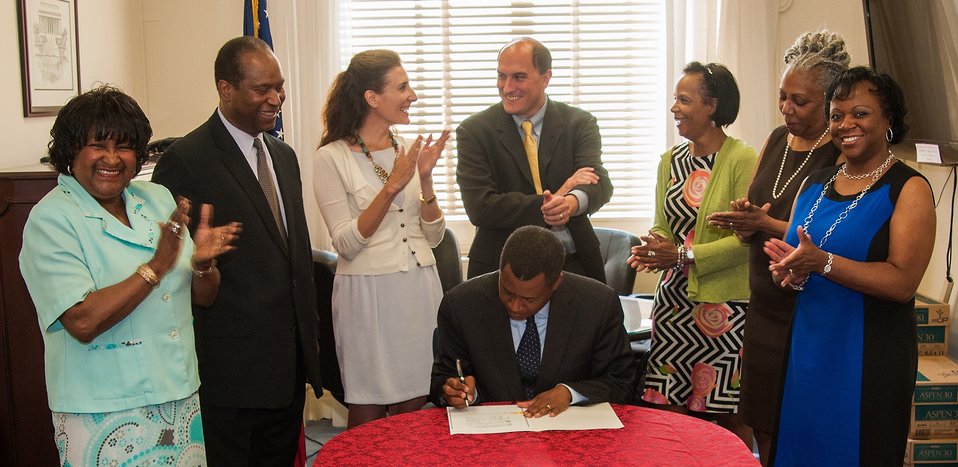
U.S. Department of Agriculture (USDA) Assistant Secretary for Civil Rights Dr. Joe Leonard, Jr. signs the USDA Departmental Regulation, Limited English Proficiency for USDA Conductive Programs at USDA headquarters in Washington, D.C. on Tuesday, Jun. 3, 2013. ( L to R behind Dr. Leonard: Administrative Assistant Dorethea Cox, Acting Director, Office of Compliance-Policy, Training and Cultural Transformation Ron Branch, Deputy Assistant Secretary for Civil Rights Lisa Pino, Special Assistant to Assistant Secretary for Civil Rights William Reid Strong, Chief of Staff, Winona Scott, Acting Chief of Policy Analysis Anna Stroman, and Executive Assistant Gwen Edmonson).